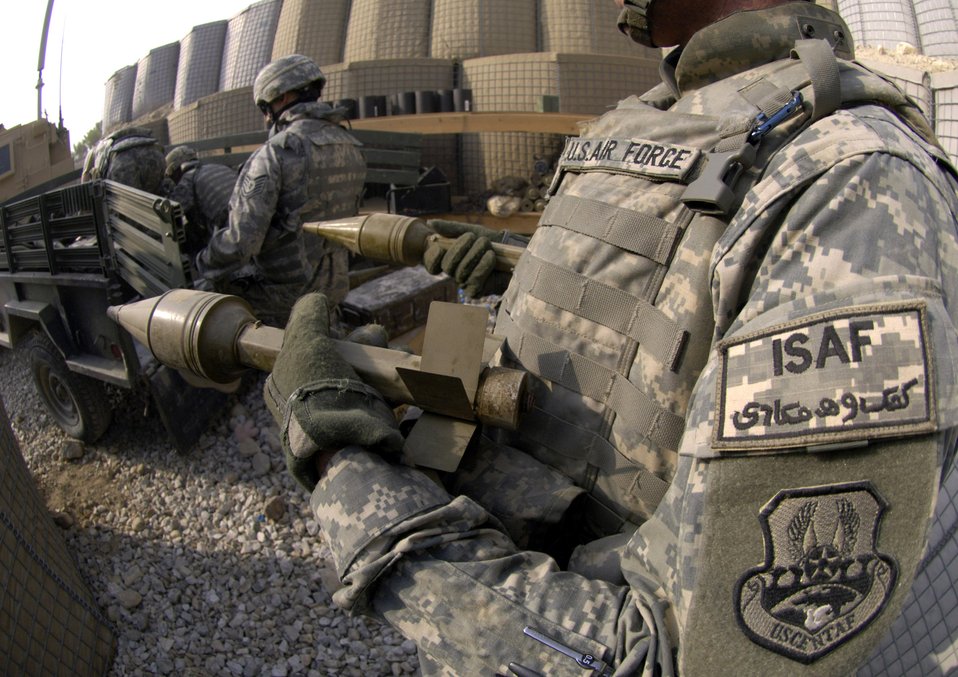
Small rewards program results in big explosion

Air Force explosive ordnance disposal specialists ready ammunition for a controlled detonation Sept. 1 at Forward Operating Base Mehtar Lam, Afghanistan. Nearly 900 pounds of small arms ammunition, rocket-propelled grenades and mortars were turned in by provincial citizens.